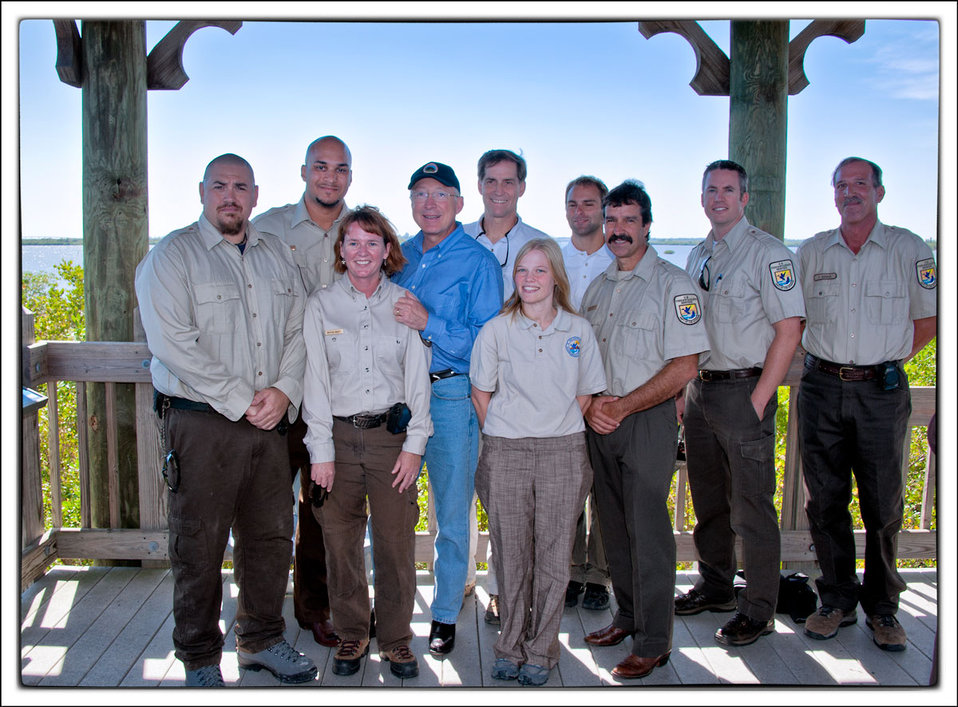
Secretary Salazar Director Dan Ashe and Pelican Island NWR Staff

Secretary of the Interior Ken Salazar and U.S. Fish and Wildlife Service Director Dan Ashe with Pelican Island National Wildlife Refuge staff